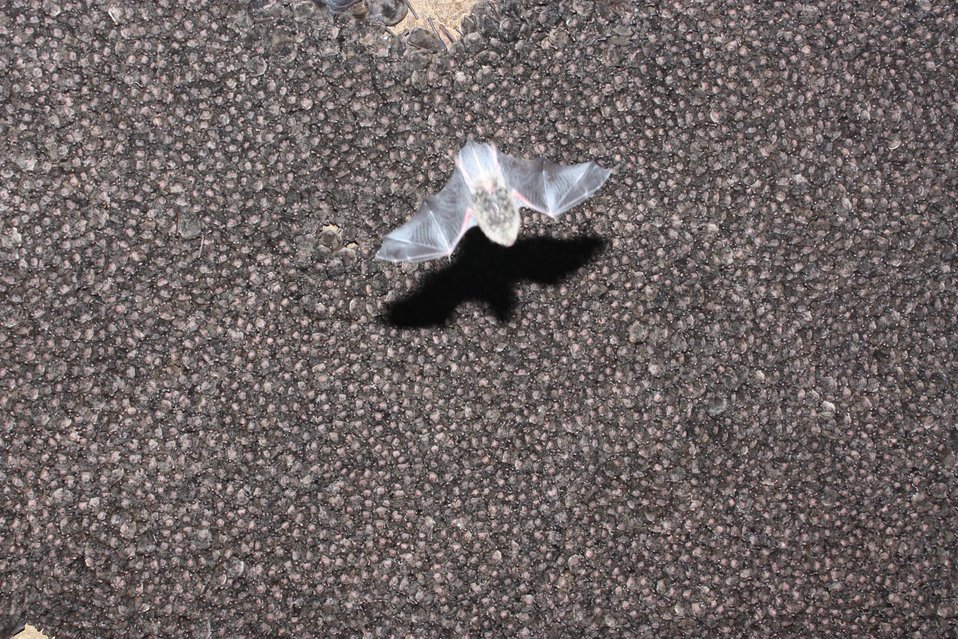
Indiana bats

Credit: USFWS; Andrew King